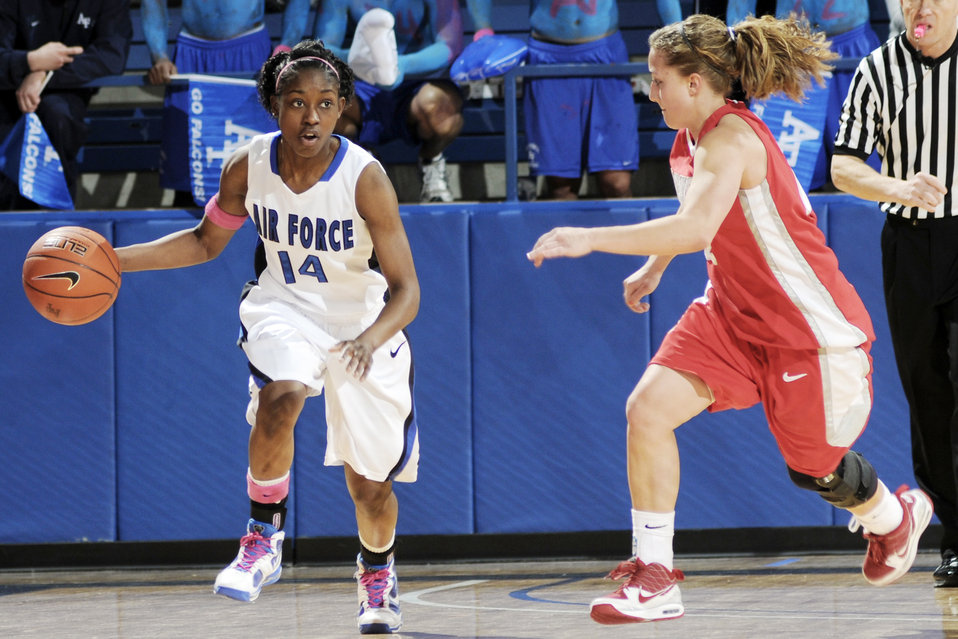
Photo essay: Academy women?s basketball falls to New Mexico

U.S. Air Force Academy freshman guard Desiree Wilson moves the ball up the court against the University of New Mexico Feb. 20, 2010, at Clune Arena in Colorado Springs, Colo. The Falcons lost 65-46.